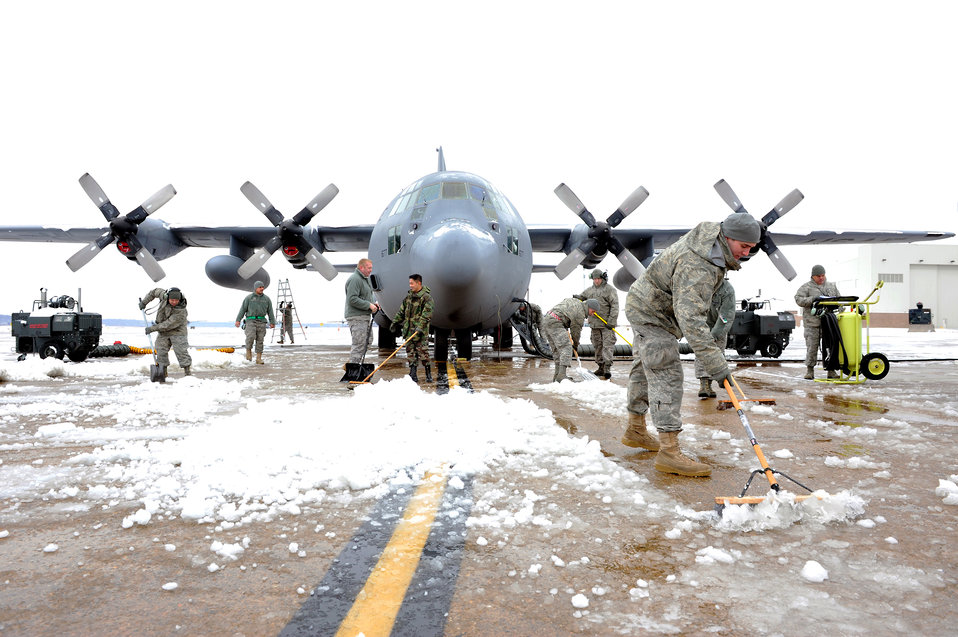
Clearing a path

Members of the 19th Aircraft Maintenance Squadron shovel snow and ice away from a C-130 Hercules Jan. 10, 2011, on the flightline at Little Rock Air Force Base, Ark. This day brought in the first snow of the new year at Little Rock AFB.